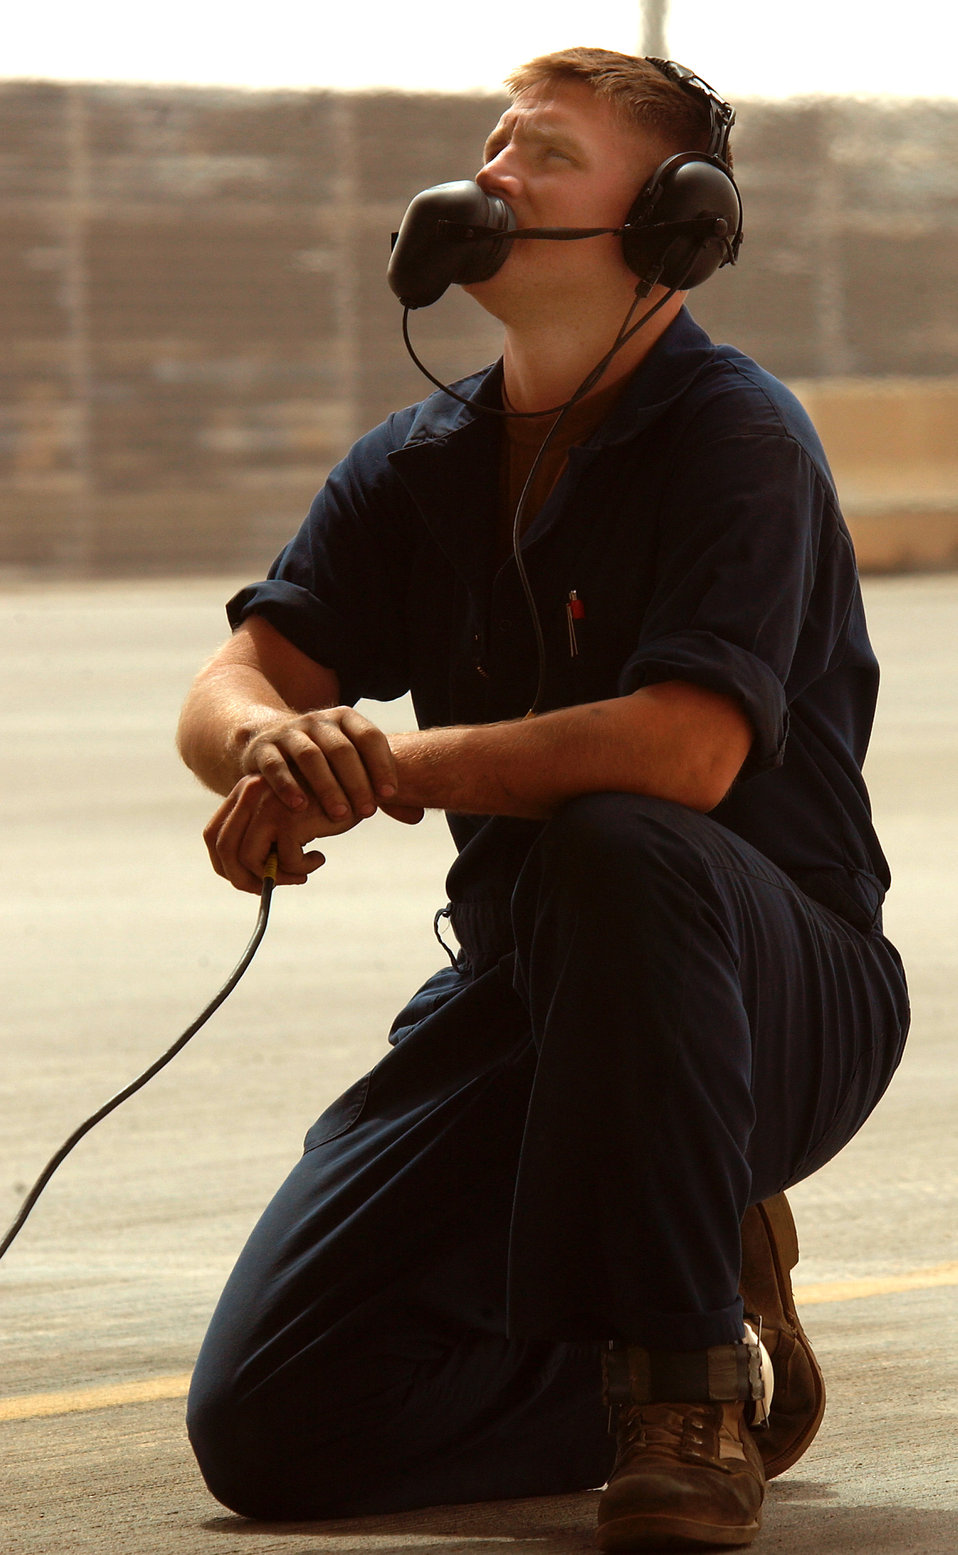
Kruse

OPERATION IRAQI FREEDOM -- Senior Airman Adam Kruse communicates with a pilot about to take off on a mission March 20. Kruse is a crew chief deployed to the 363rd Expeditionary Aircraft Maintenance Squadron at a forward-deployed location in Southwest Asia.